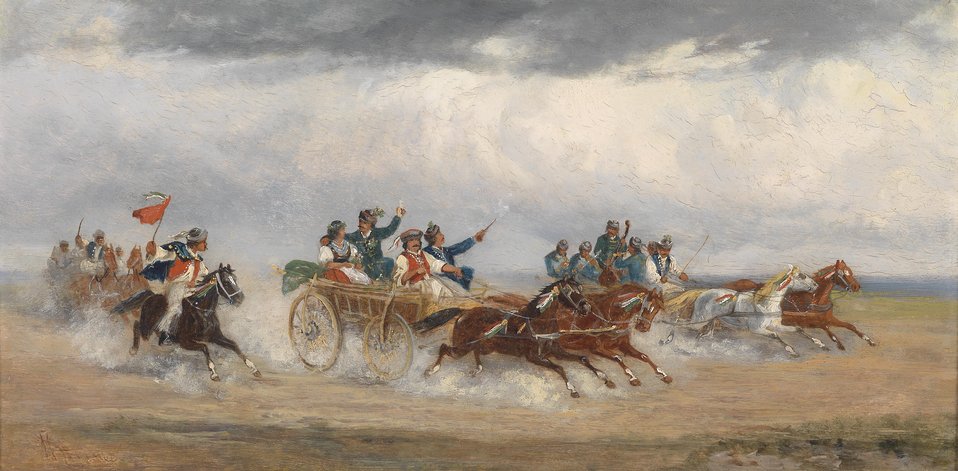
Alfred Steinacker Ungarischer Hochzeitswagen